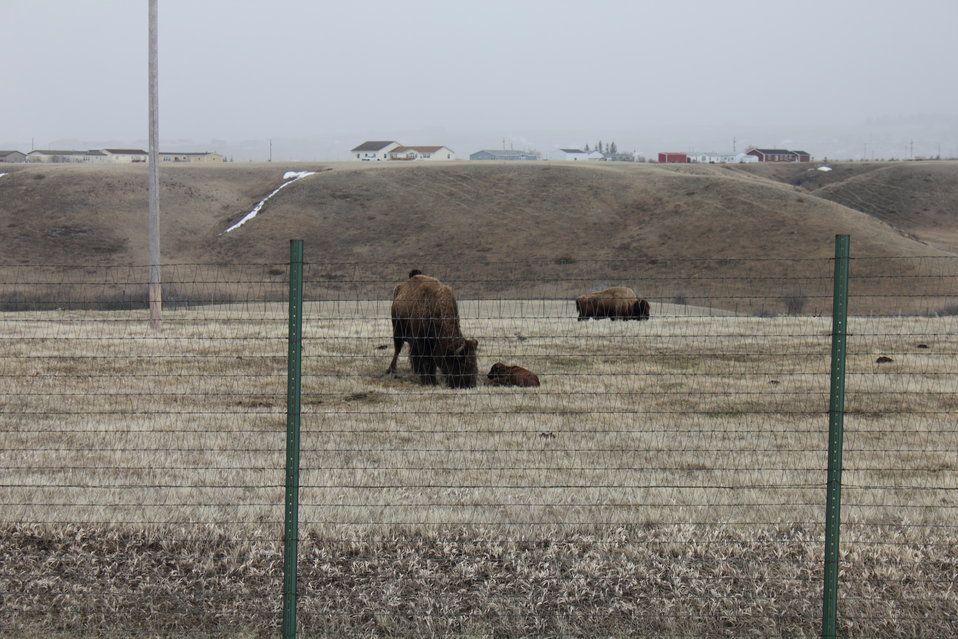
Newborn Bison Calf

New bison calf born on April 7, 2011 on the Charles M. Russell National Wildlife Refuge in Montana.